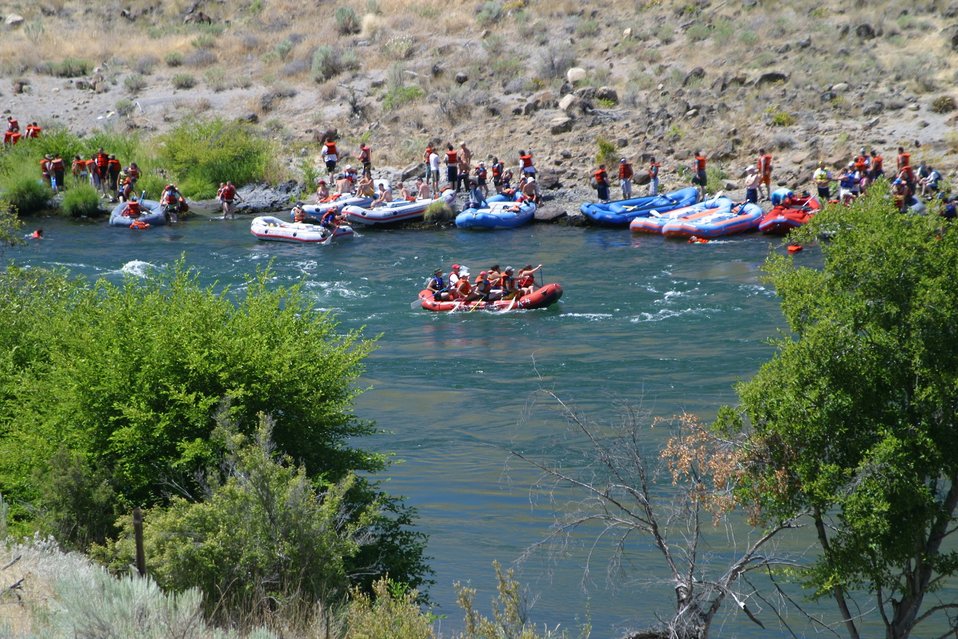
Elevator Rapids near Mile 46 on the Lower Deshcutes River. 7/26/03 Pelton Dam 3600 cfs: Moody Rapids 4300 cfs.